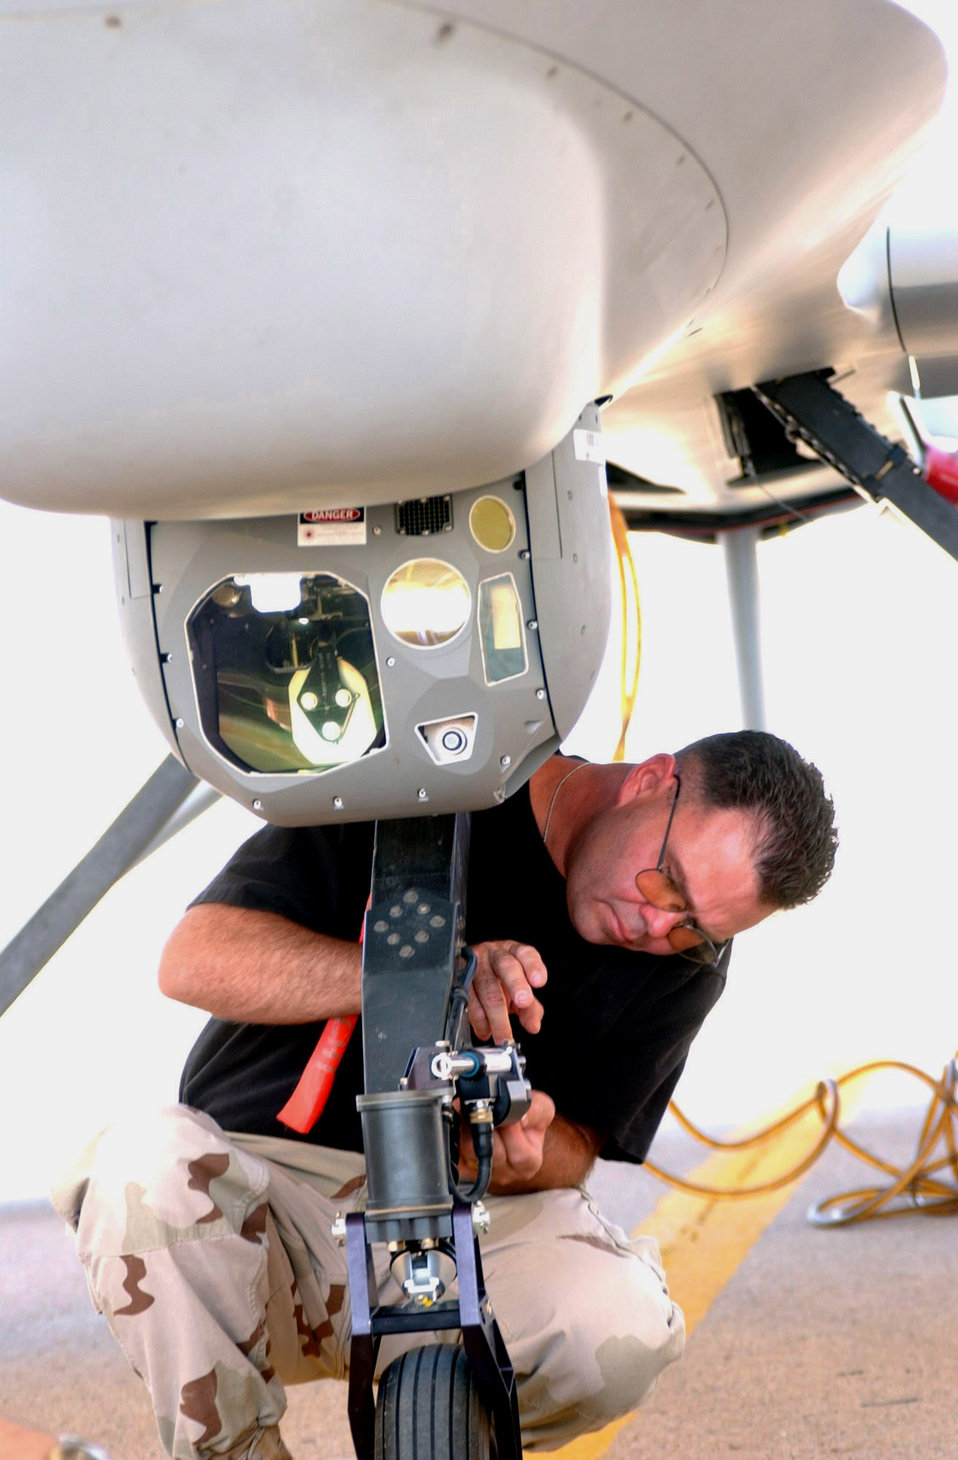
Gear inspection

TALLIL AIR BASE, Iraq (AFPN) -- Tech. Sgt. Thomas McGuire inspects the nose landing gear of an MQ-1 Predator Unmanned Aerial Vehicle after a mission over Iraq on July 21. He is a production superintendent deployed with the 332nd Air Expeditionary Wing supporting Operation Iraqi Freedom.